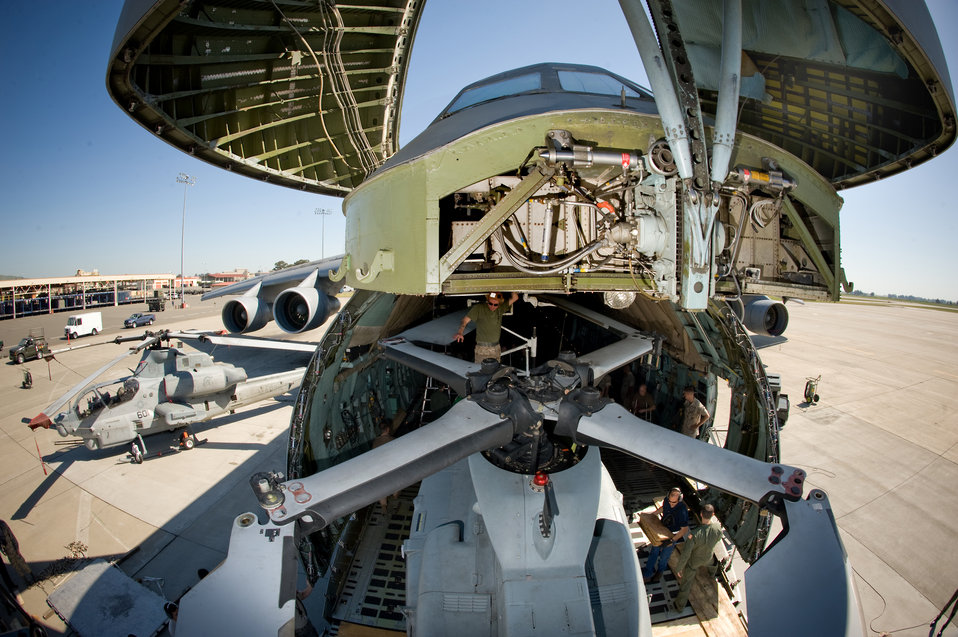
C-5 / Helicopter Load Exercise

Marine Sgt. Destin Waldron is the top side spotter on a UH-1Y helicopter being maneuvered into a C-5C Galaxy. Airmen from Travis Air Force Base, Calif., and Marines from Camp Pendleton, Calif., came together at Travis AFB April 20 to determine how the helicopter best fit into the cargo bay of the C-5 and how many could be loaded at one time. The goal is to get helicopters into the area of responsibility faster and ultimately into the fight. Sergeant Waldron is a crew chief with Marine Light Attack Helicopter Squadron 367 at Camp Pendleton.